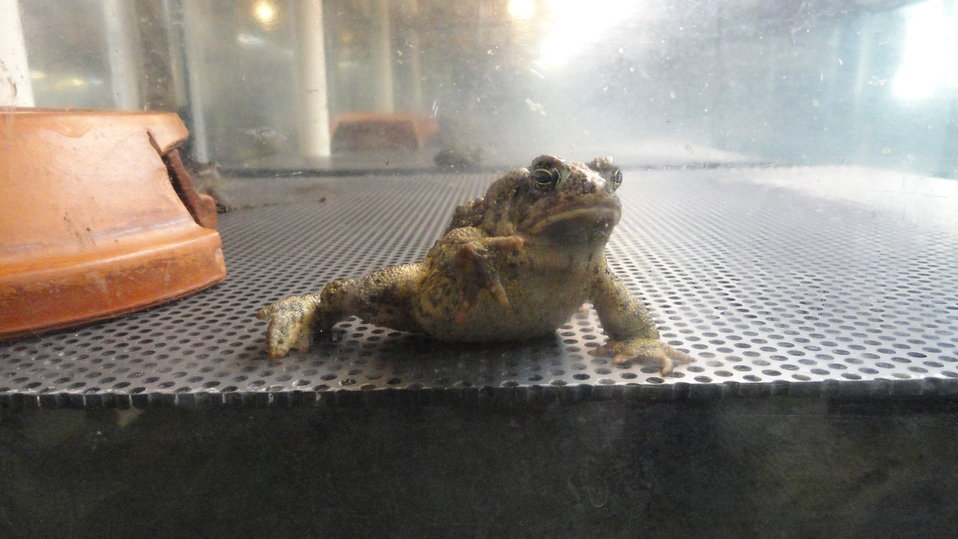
Visiting Saratoga National Fish Hatchery

In April of 2014, regional office employees visited Saratoga National Fish Hatchery to learn more about its efforts towards recovering the Wyoming toad (Bufo baxteri).

The hatchery adopted a unique role in becoming the first unit in the National Fish Hatchery System to become involved in rearing endangered amphibians. The Wyoming toad was a common sight on areas of the Laramie Plains, Albany County, Wyoming, into the early 1970s but the species' populations crashed in the mid-1970s. The Wyoming toad was listed as endangered by the U.S. Fish & Wildlife Service in January 1984. Found only in southwestern Wyoming, the Wyoming toad is considered the most endangered amphibian in North America. The hatchery maintains a captive population for breeding, rearing, and refugia, and the offspring from this program will be used for reintroduction efforts.